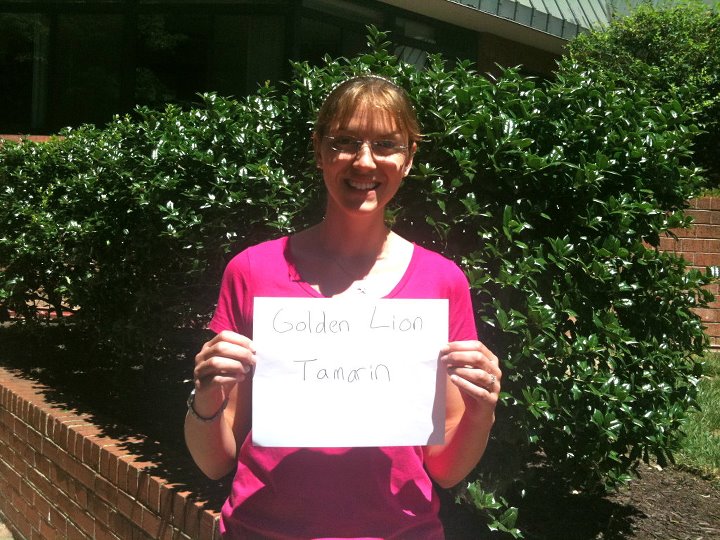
Kimmy Kraeer, 'Golden Lion Tamarin,'

International Affairs participates in FFI's In Our Hands campaign